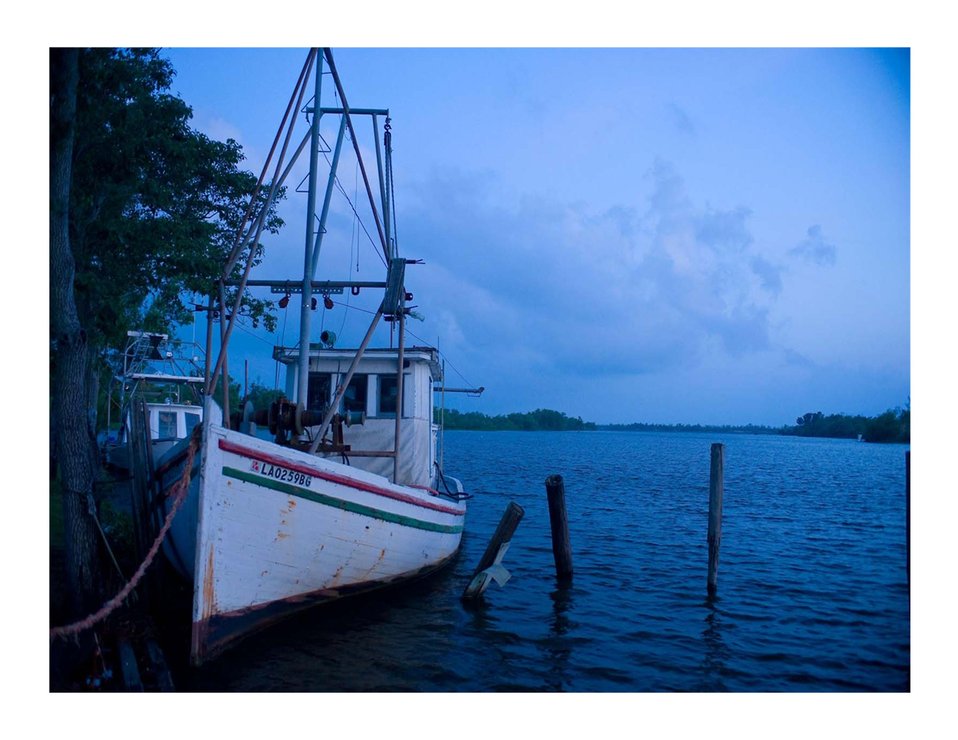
Fishing boat at anchor, Louisiana